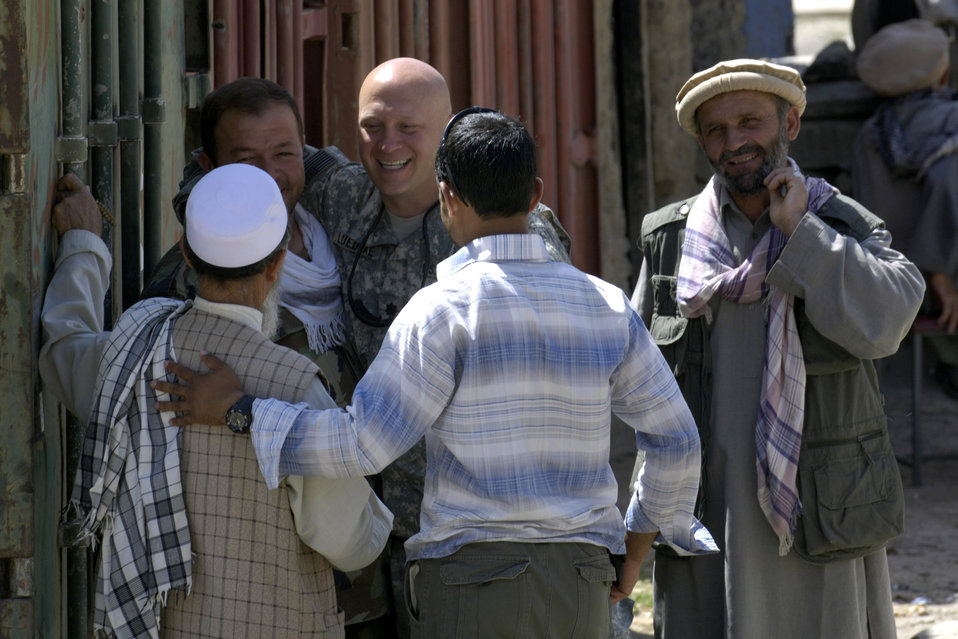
Airmen go hand-to-hand with Afghan National Police

Lt. Col. Christopher Luedtke talks with locals living in the Anaba district of Panjshir Province, Afghanistan, Aug. 6. Colonel Luedtke, commander of the Panjshir Provincial Reconstruction Team, brought members of his PRT to Anaba to provide training to Afghan National Police serving in the area. Colonel Luedtke is deployed from Hill Air Force Base, Utah.